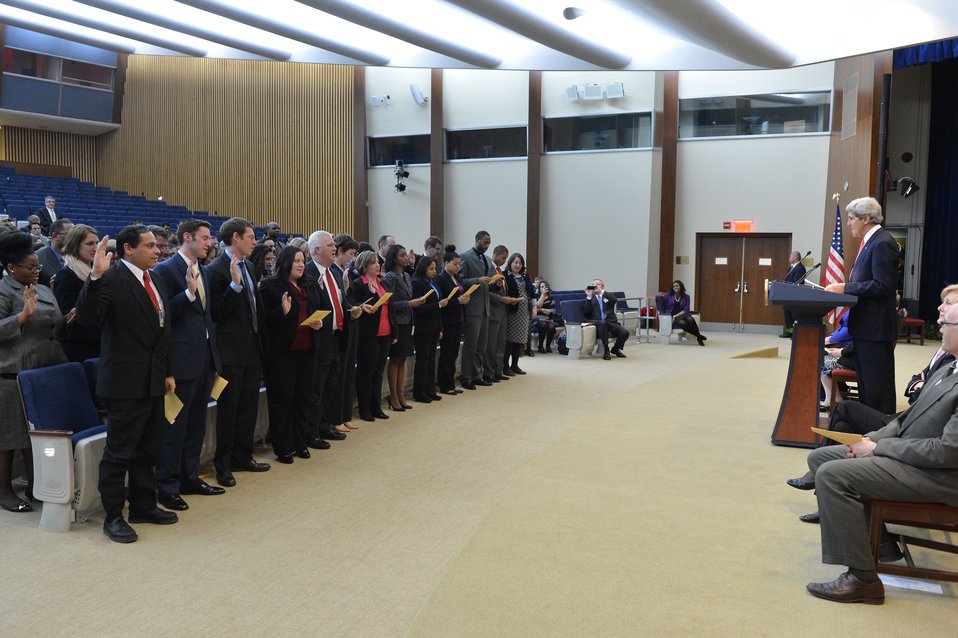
Secretary Kerry Swears in a Civil Service Orientation Class

U.S. Secretary of State John Kerry swears in a Civil Service Orientation Class at the U.S. Department of State in Washington, D.C., on January 17, 2014.